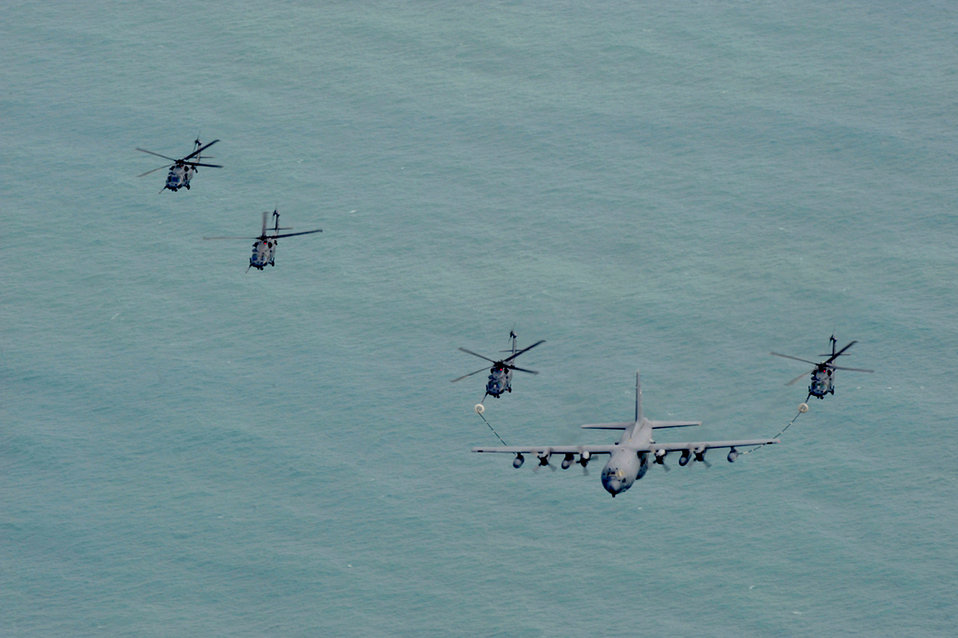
Rescue wing Airmen launch entire fleet during hurricane exercise

Aircraft from the Air Force Reserve's 920th Rescue Wing at Patrick Air Force Base, Fla., fly over the Atlantic Ocean March 6, 2011. Airmen launched six HH-60G Pave Hawk helicopters and three HC-130P/N King extended-range refueling aircraft during their drill training weekend.